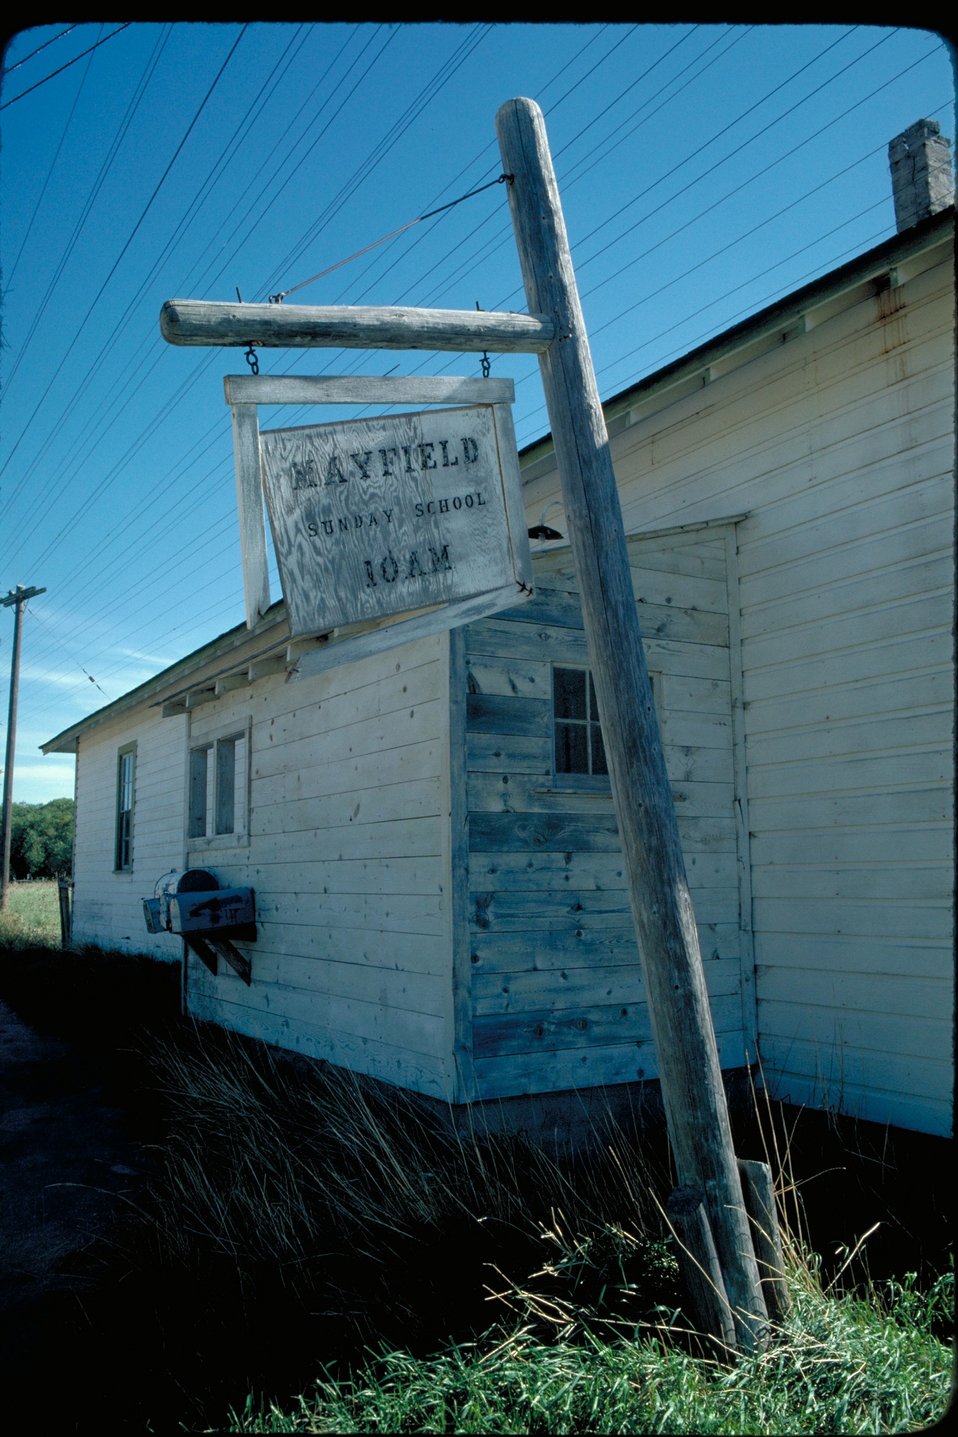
Mayfield Church Oregon Trail Lower Snake River District